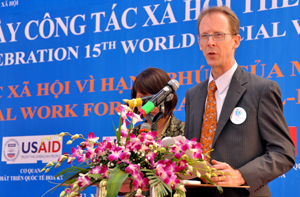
USAID Mission Director Joakim Parker speaks at the Social Work Day event in Hanoi

Photo: @USAIDVietnam, November 9, 2012